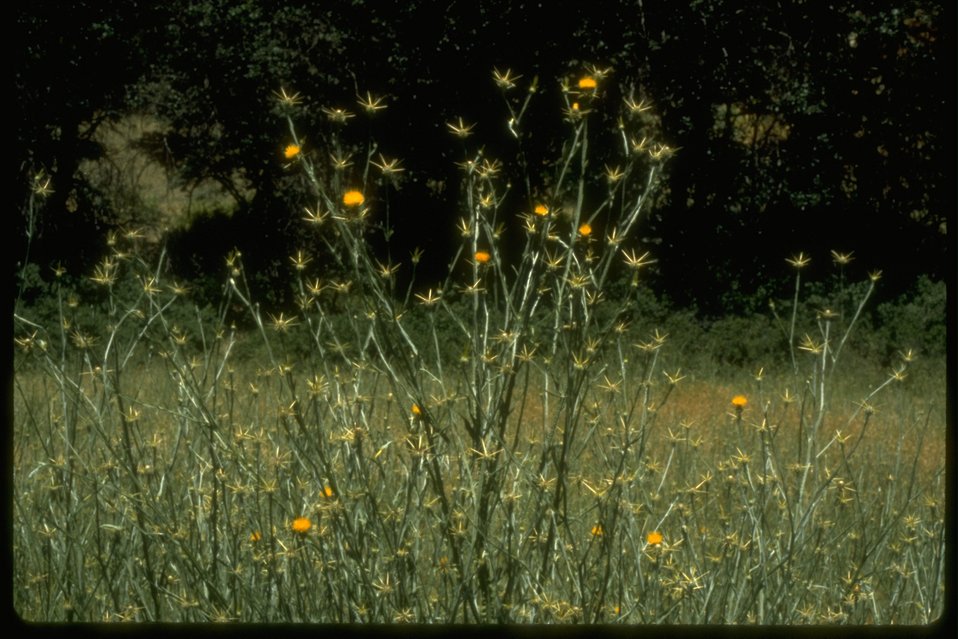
A small bunch of Yellow Starthistle.